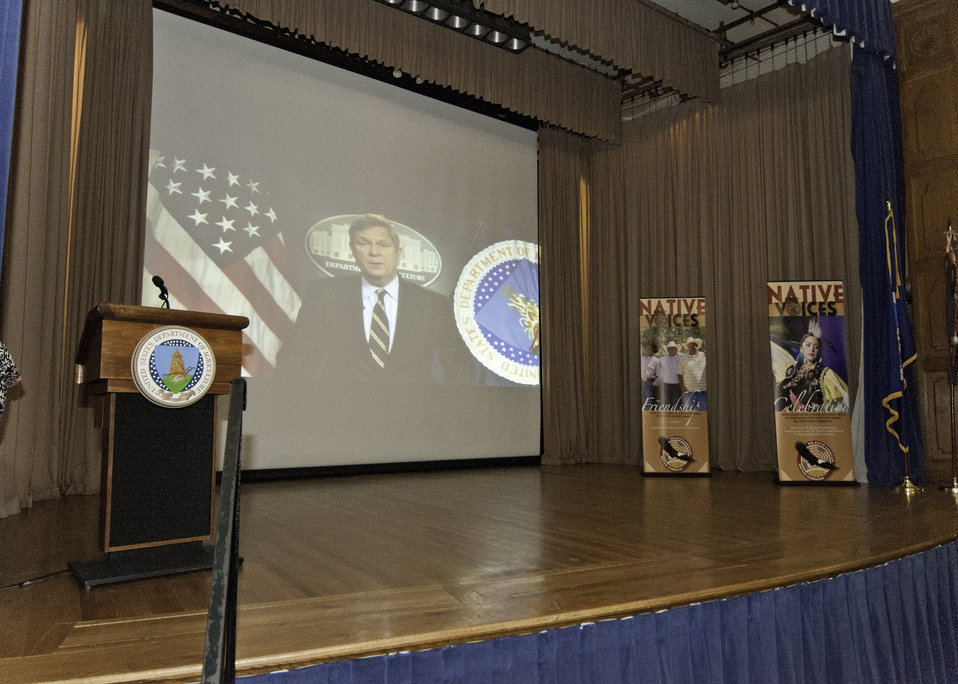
Agriculture Secretary Tom Vilsack offered his remarks via a video feed to employees and guests at the Native American Indian Heritage Month celebration at the United States Department of Agriculture in Washington, DC, on Wednesday, November 16, 2001. The theme of this year’s event is, “Native Youth: Cultivating the Future.”